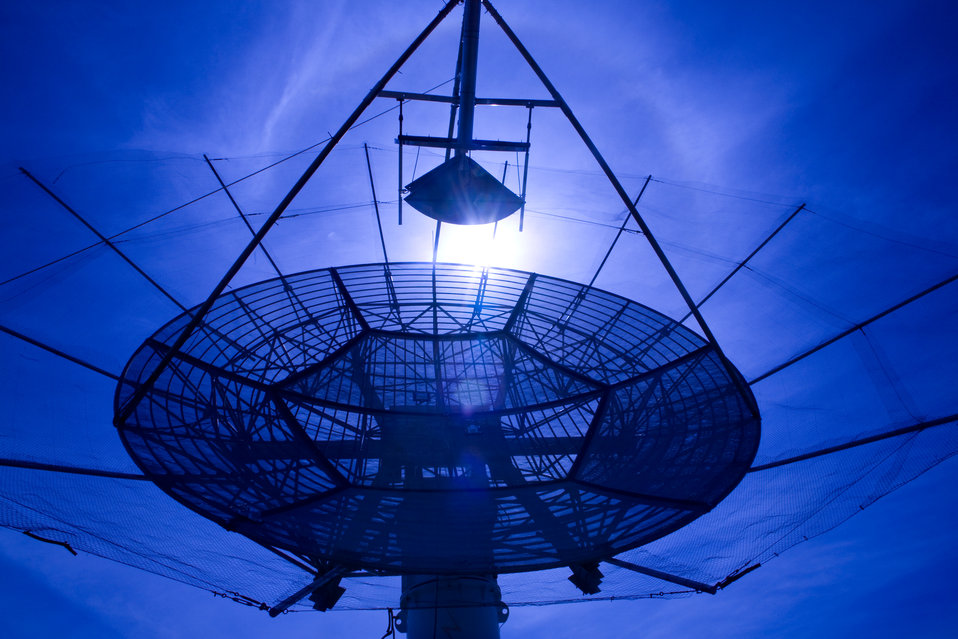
THE LOS ALAMOS PORTABLE PULSER PRODUCES A RADIO FREQUENCY (RF) SIGNAL THAT MIMICS WHAT WOULD COME FROM A WEAPON.

The signal, broadcast into through this dish antenna located near LANL's Physics building, is used to calibrate sensors on orbiting satellites.